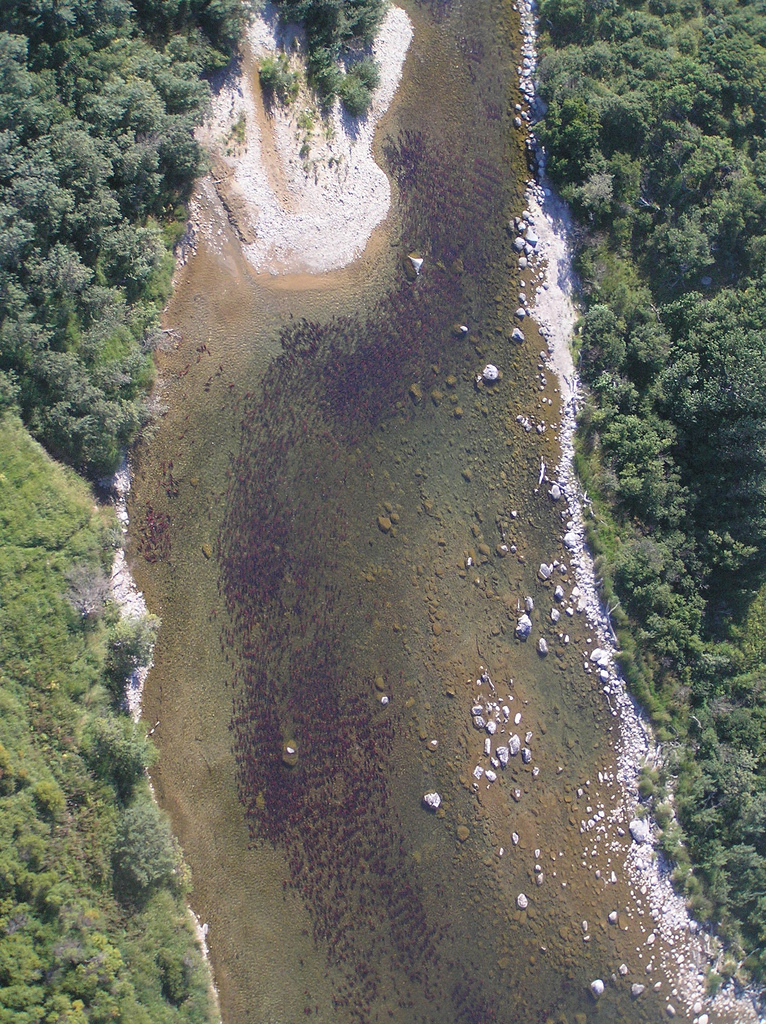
August 2005, Salmon return in droves to Gibraltar Creek

Look closely and you'll notice the dark shadow in the river is actually thousands of sockeye salmon!

Every summer, millions of sockeye return from the saltwater of the ocean to spawn in the fresh waters of Bristol Bay.

Their eggs hatch and develop into salmon fry that eventually return to the ocean. They grow in the ocean and return to Bristol Bay to repeat the cycle.

Photo courtesy of Thomas Quinn, University of Washington

Visit www.epa.gov/bristolbay for more information about EPA's Bristol Bay Watershed Assessment